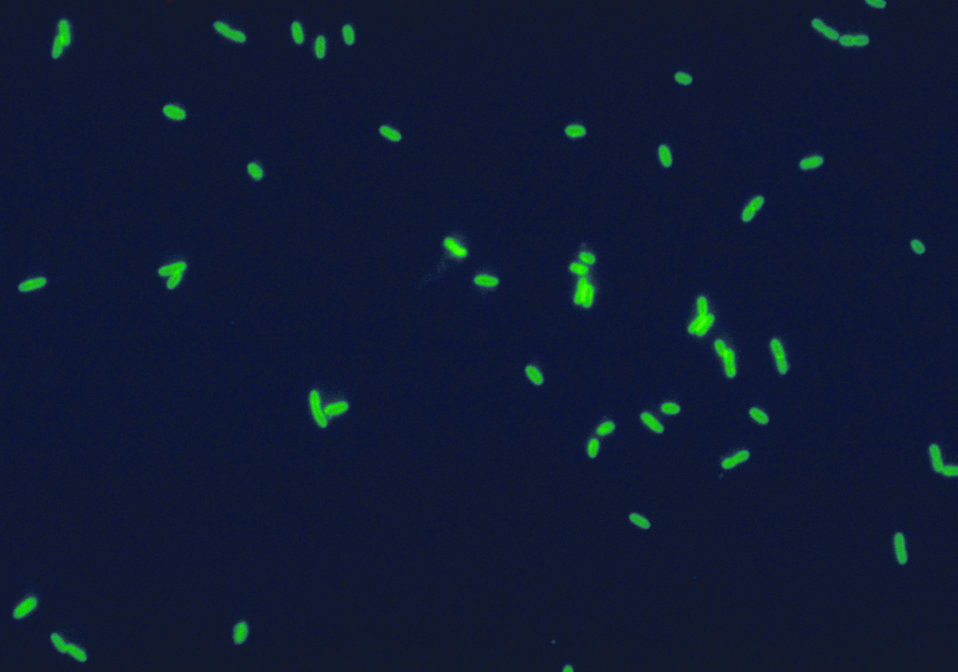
L. pneumophila stained using direct FA technique. Mag. 400x